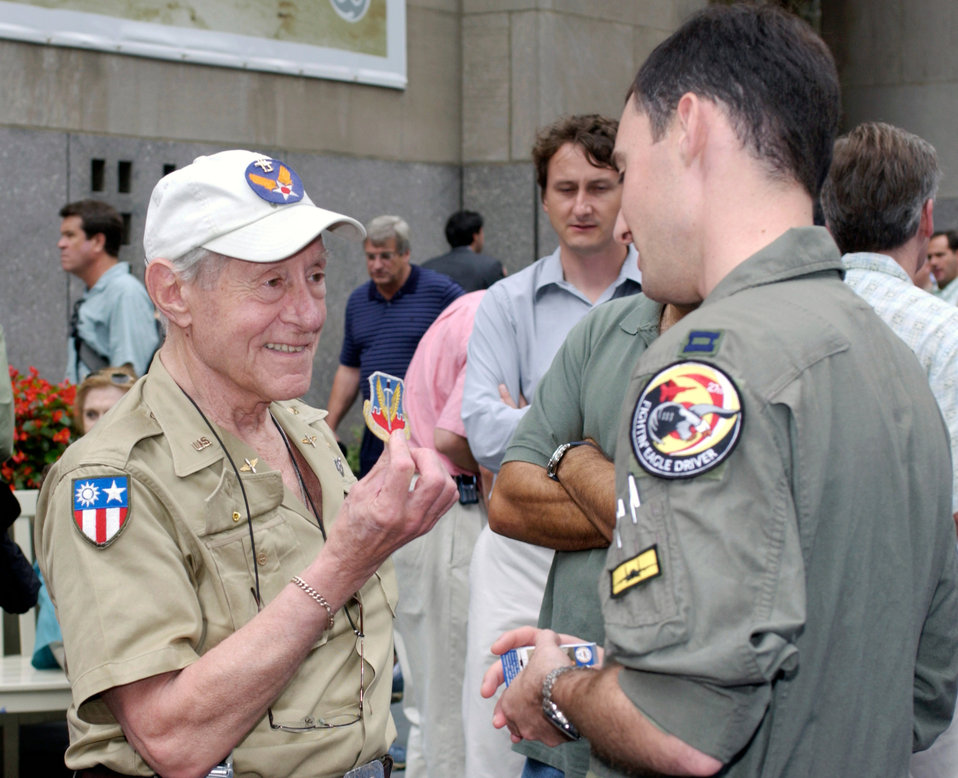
Talking pilot to pilot

NEW YORK -- Arthur Lasker, a World War II veteran and P-38 Lightning pilot, talks to Capt. David Shachter during a Centennial of Flight celebration Aug. 8 at Rockefeller Center here. Shachter is an F-15 Eagle pilot assigned to the 27th Fighter Squadron at Langley Air Force Base, Va.